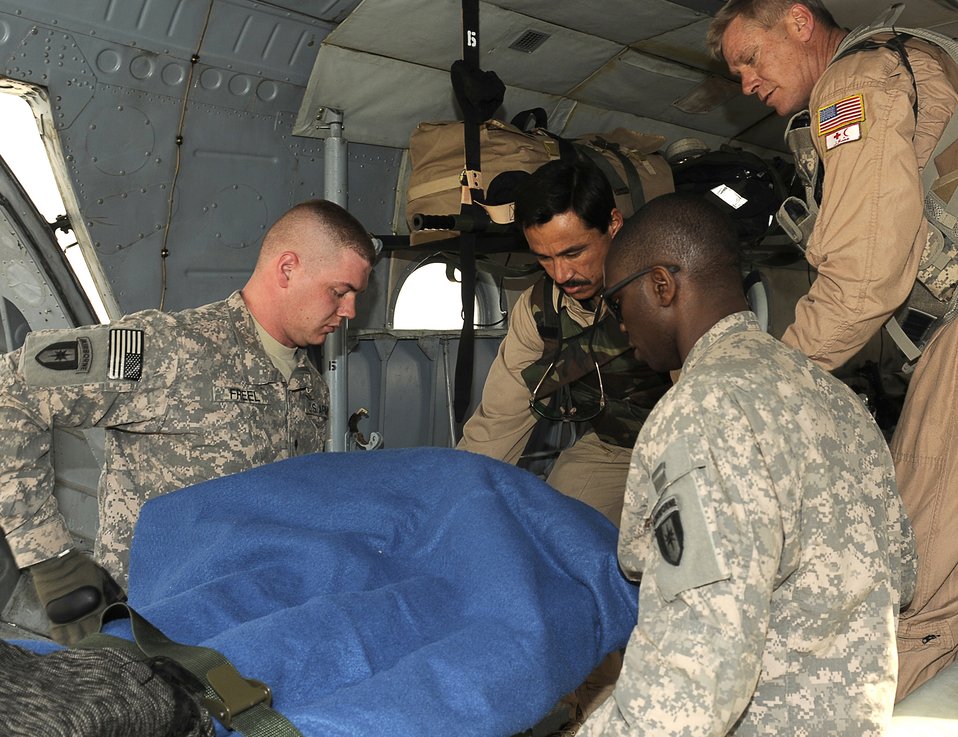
Soldiers help an Airman and an Afghan airmen secure equipment to an Mi-17 helicopter

U.S. Army Spc. Nathan Freel (left) and Army Spc. Ed Okul help Afghanistan National Army Air Corp Sgt. 1st Class Ghulam Sakhi and Air Force Master Sgt. Richard Kramer load an Afghan soldier into an Mi-17 helicopter for a medical evacuation Feb. 3, 2010, at Bagram Airfield, Afghanistan. Specialists Freel and Okul are assigned to the 36th Air Support Medical Company and Sergeants Kramer and Sakhi are flight medics with the 438th Air Expeditionary Advisory Group/Combined Air Power Transition Force.